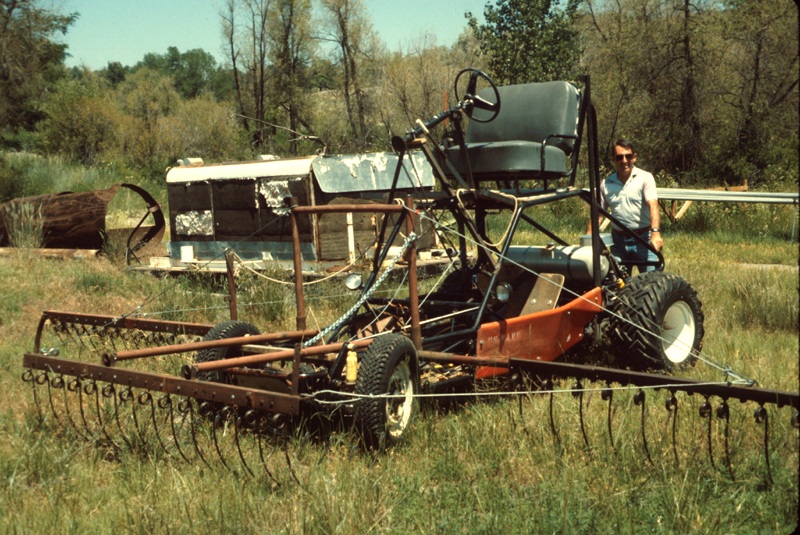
Sagebrush Flailer Range Restoration Project Lower Snake River District